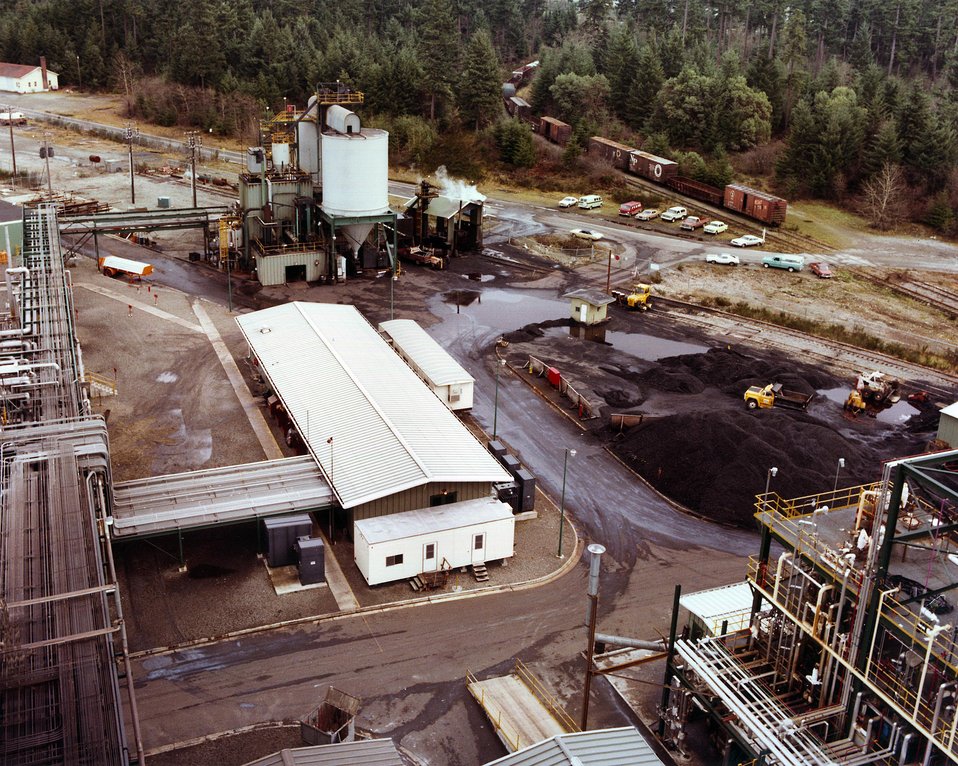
OVERALL VIEW OF PLANT, WITH CONTROL ROOM IN CENTER.